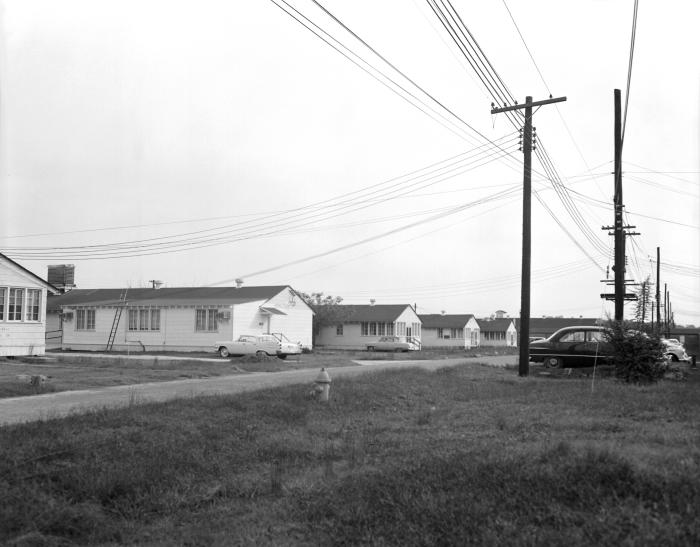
This photograph, taken in 1957 on the Centers for Disease Control's Chamblee Campus, showed rows of laboratory facilities as part of the location's Lawson Facilities.